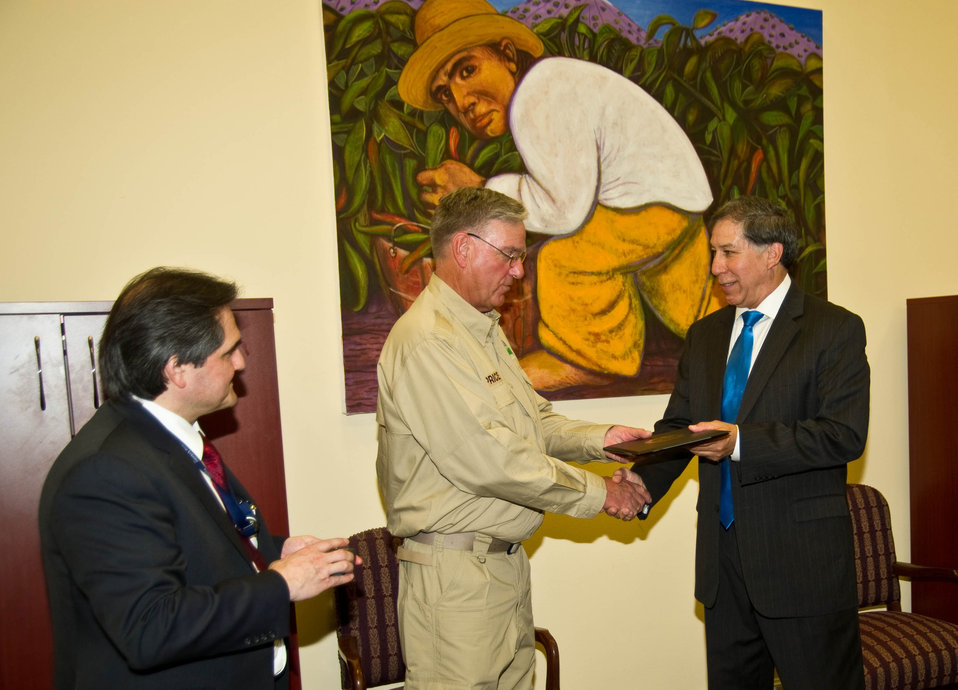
U.S. Department of Agriculture (USDA) Animal and Plant Health Inspection Service (APHIS) Acting Associate Administrator Peter Fernandez (left) and Agriculture Under Secretary for Marketing and Regulatory Programs (MRP) Edward Avalos present (right) the USAF Award for Exemplary Civilian Service to USDA APHIS Wildlife Service Biologist New Mexico district supervisor Keel Price for his work in Afghanistan on Tuesday, Mar. 19, 2013.